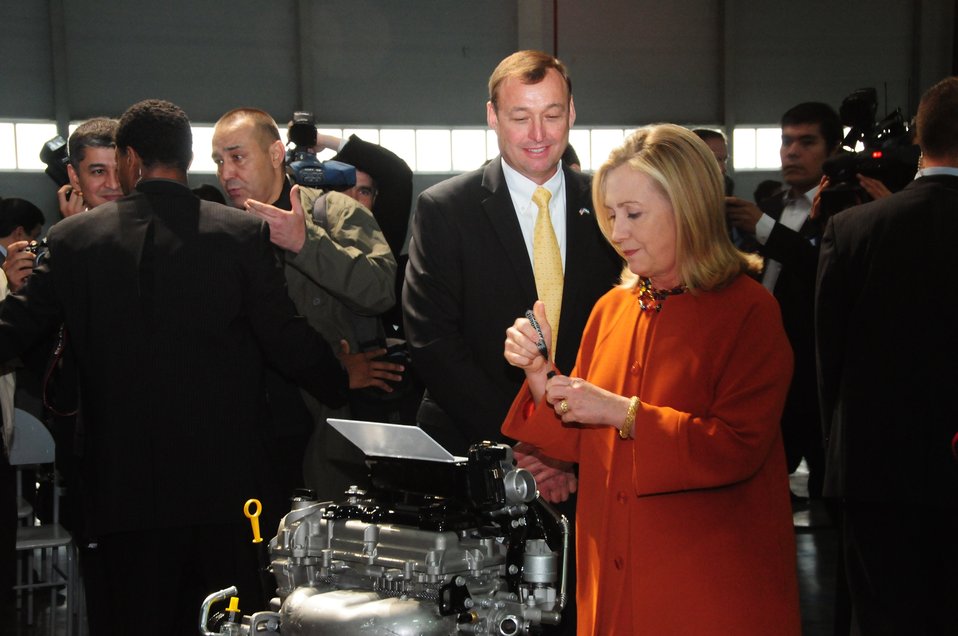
Secretary Clinton Prepares To Sign a Completed Engine

U.S. Secretary of State Hillary Rodham Clinton prepares to sign a completed engine as General Motors (GM) Uzbekistan General Director Juergen Spendel looks on at the GM factory in Tashkent, Uzbekistan, on October 23, 2011.